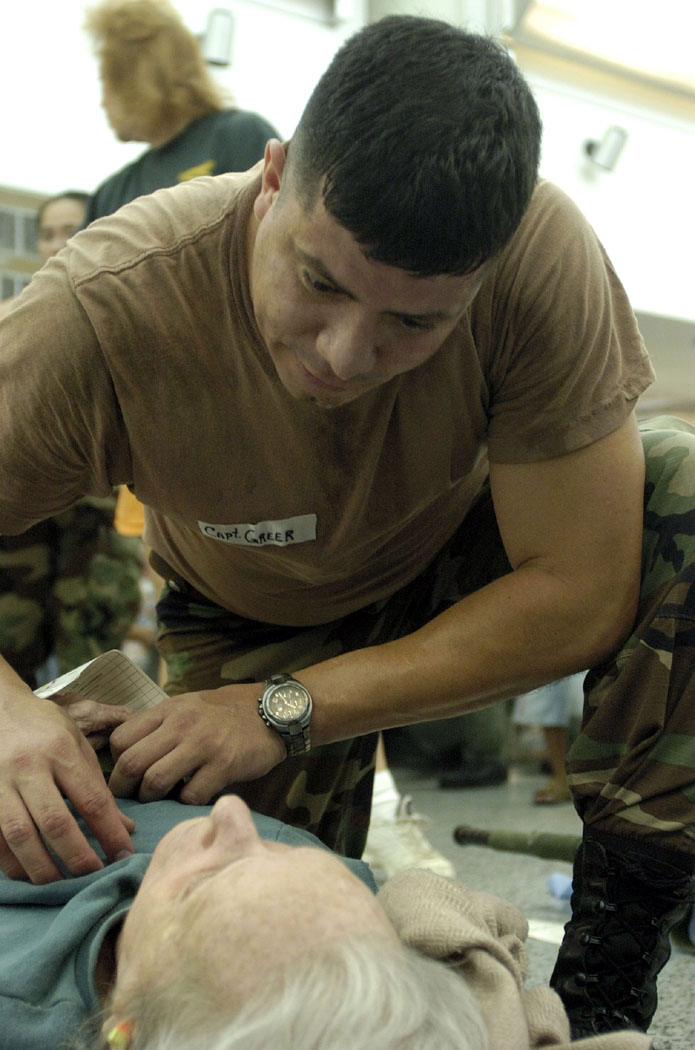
433rd Airlift Wing Airmen learn from Katrina

Capt. Edward Greer comforts a patient at the Louis Armstrong International Airport in New Orleans moments before she is taken to an aircraft for evacuation Sept. 3, 2005. Captain Greer is a flight nurse with the 433rd Aeromedical Evacuation Squadron at Lackland Air Force Base, Texas.